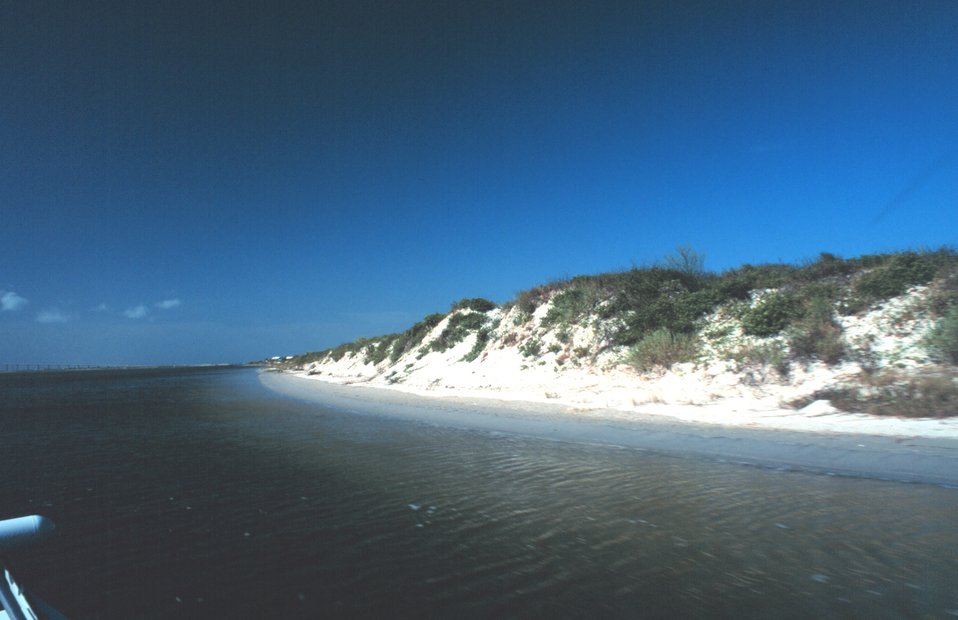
Vegetation-covered dunes on the west side of Padre Island